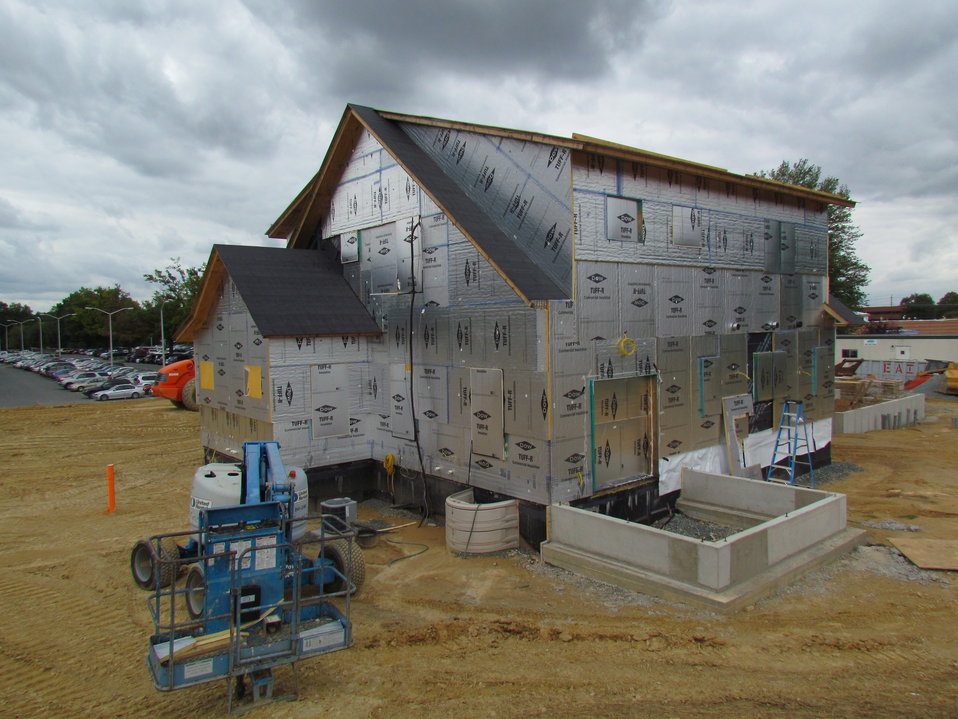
Net-Zero Energy Residential Test Facility - Picture showing completion of the concrete knee walls that from the foundation of the attached rear porch.